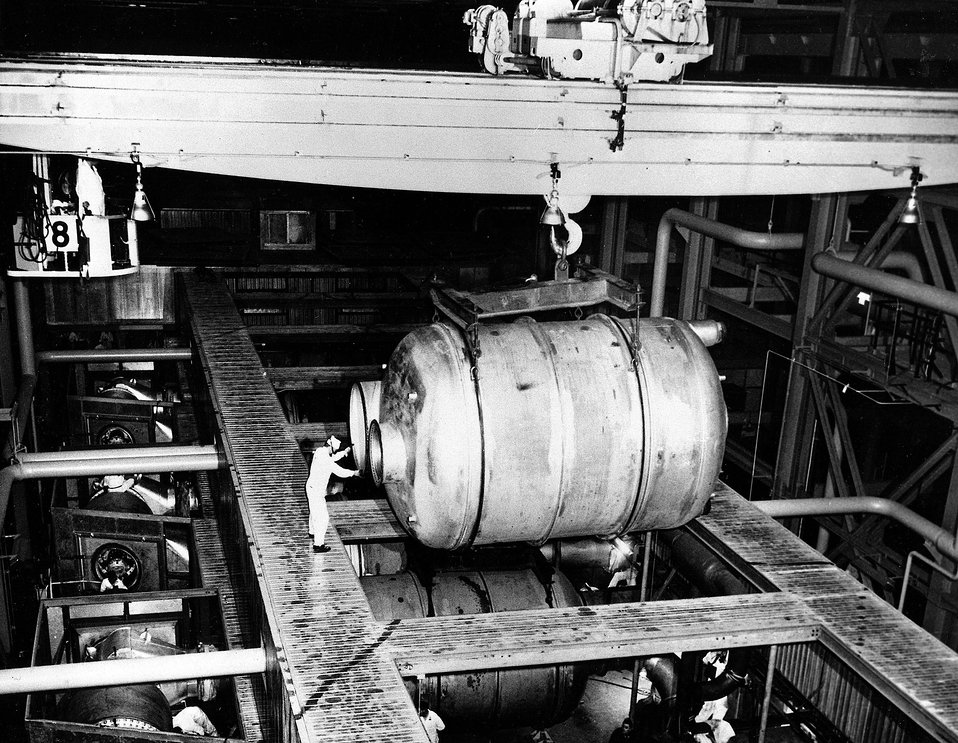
The Process Equipment Modification Project involves improving the components in the existing gaseous diffusion plants. Circa 1975.